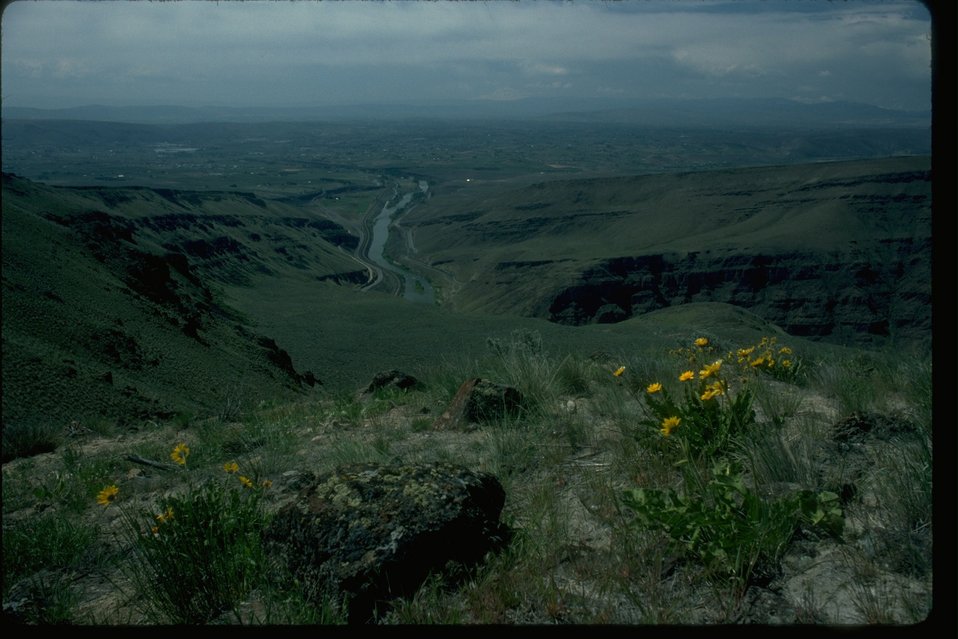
Yakima River Canyon viewed from south end.